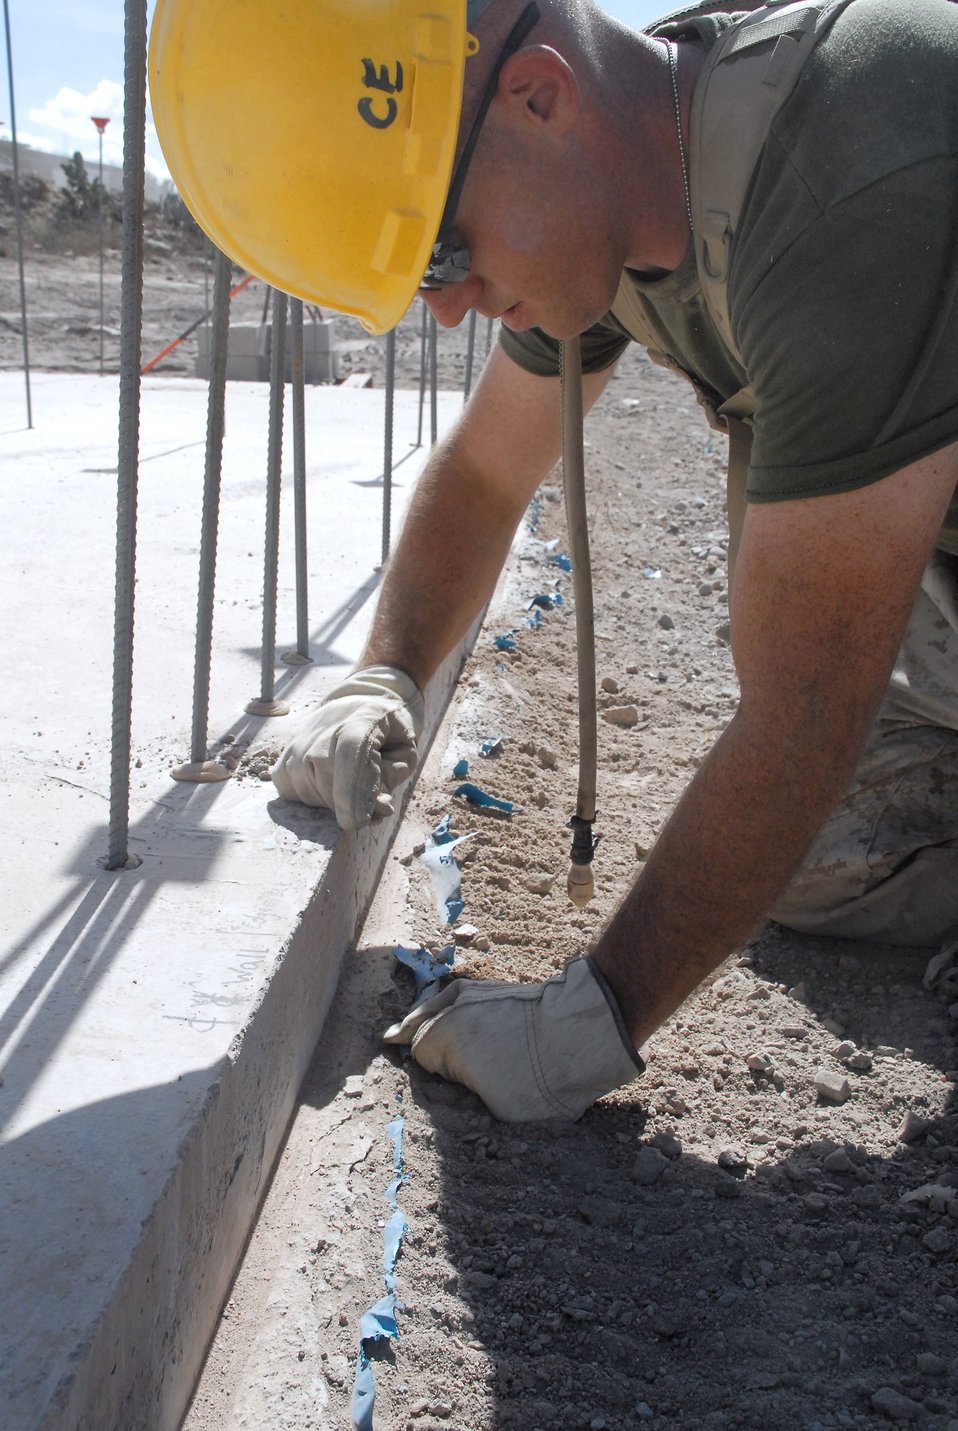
New Horizon Peru

Marine Lance Cpl. Christopher Johnson removes excess poly from the edges for a school being built in Yanamilla, Peru, in support of New Horizons Peru 2008, a humanitarian event that benefits thousands of Peruvians. Nearly 300 members from the U.S. Air Force, Army, Marines and Navy came together to provide Peruvians with new schools, clinics and water wells. Corporal Johnson is a combat engineer deployed from the Marine Wing Support Squadron 472, Det. Bravo at Westover Air Reserve Base, Mass.